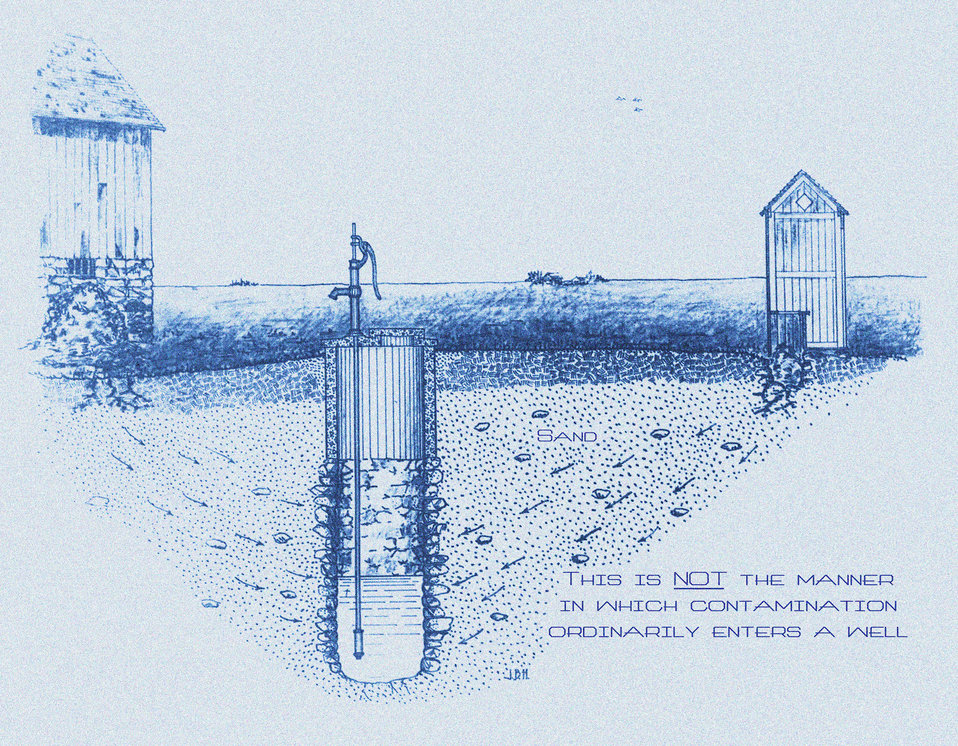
This historic 1915 diagram, which had been digitally enhanced and colorized, depicted some of the structural details associated with a properly constructed 'dug' type well. It showed how well water contamination was erroneously thought to occur. This was one of a series of instructional drawings used by the Minnesota Board of Health to train state public health workers.